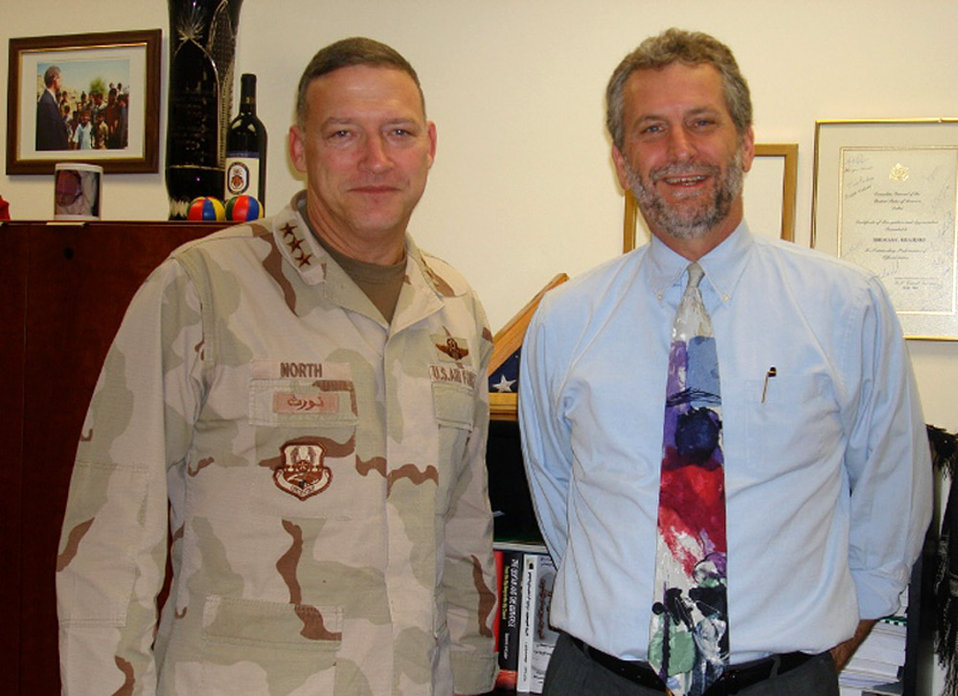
Senior air operations official visits Yemen

Lt. Gen. Gary L. North visits with U.S. Ambassador to Yemen Thomas C. Krajeski Feb. 7 in Yemen. General North is the commander of U.S. Central Command Air Forces and also met with senior Yemini air force officials.